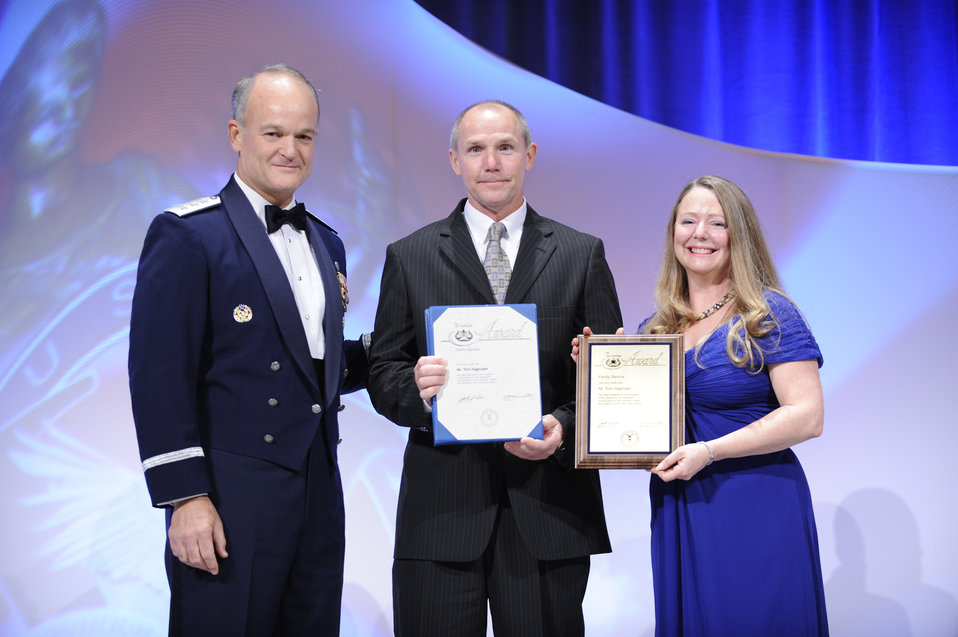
Joy Dunlap Family Service Award presentation

Lt. Gen. Jack L. Rives presents the Joy Dunlap Family Service Award to Tom Hagmaier as Ms. Dunlap assists. The presentation took place during the U.S. Air Force Judge Advocate General Corps' Keystone Conference 2009 Oct. 29, 2009, in Dallas.